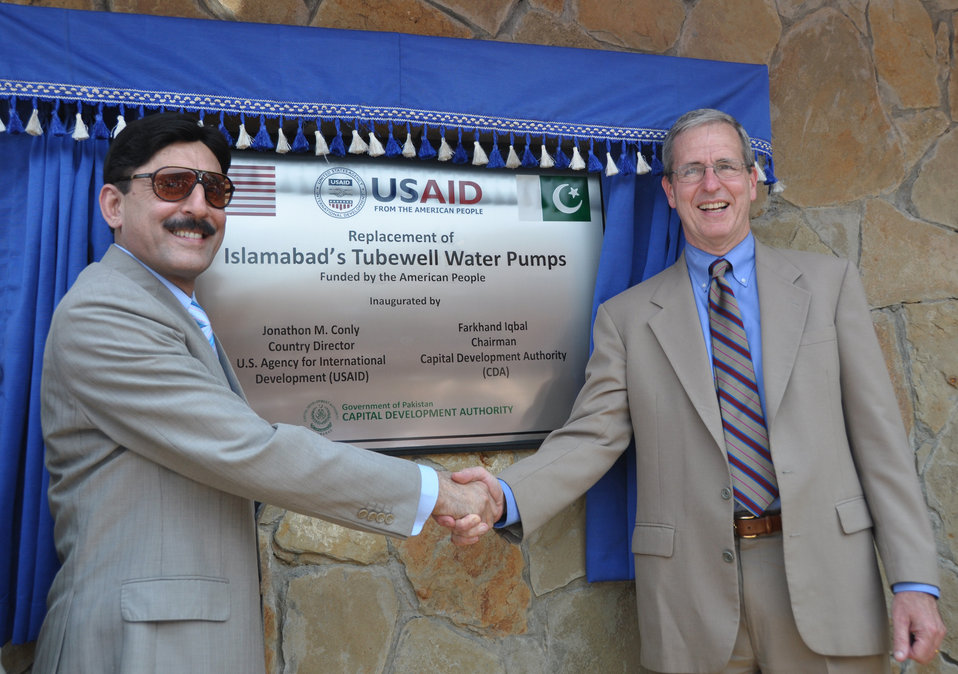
USAID funds replacement of 187 CDA Tubewell Pumps

Islamabad, July 17, 2012 – USAID Country Director Jonathan M. Conly and CDA Chairman Farkhand Iqbal at the launch of the USAID-funded replacement of tubewell pumps for the city of Islamabad. USAID will replace all 187 tubewell pumps owned by the Capital Development Authority (CDA) in order to improve water supply for Islamabad, reduce energy consumption, and decrease the electricity bills for CDA.